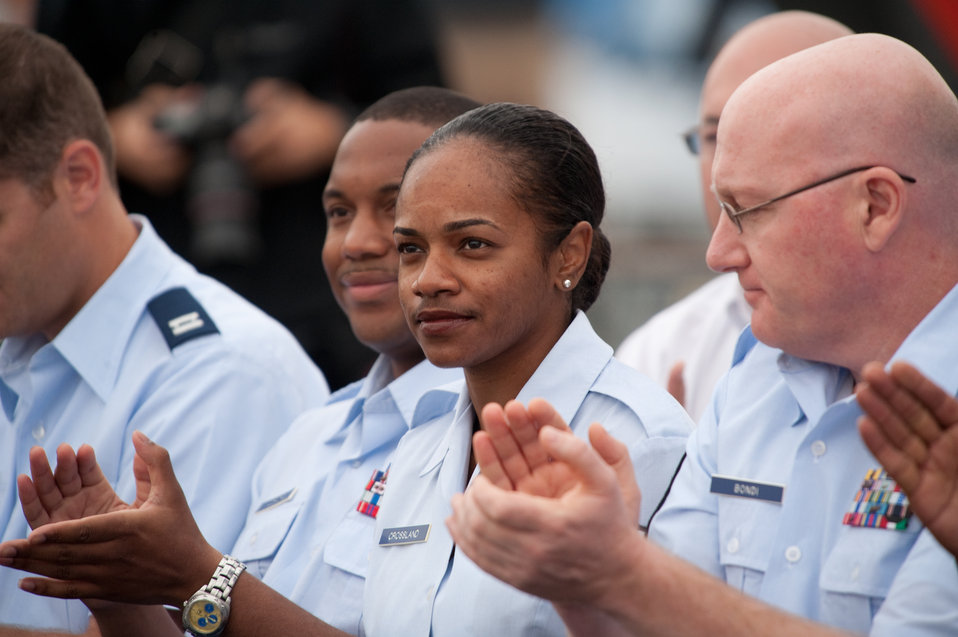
Air Force Week New York City Proclamation Ceremony

Staff Sgt. Mercedes Crossland is recognized as a hometown hero, during the Air Force Week New York City proclamation ceremony at the Intrepid Sea, Air & Space Museum Aug. 24, 2010, in New York. Sergeant Crossland is a native of Harlem. She is a public affairs specialist from Aviano Air Base, Italy.